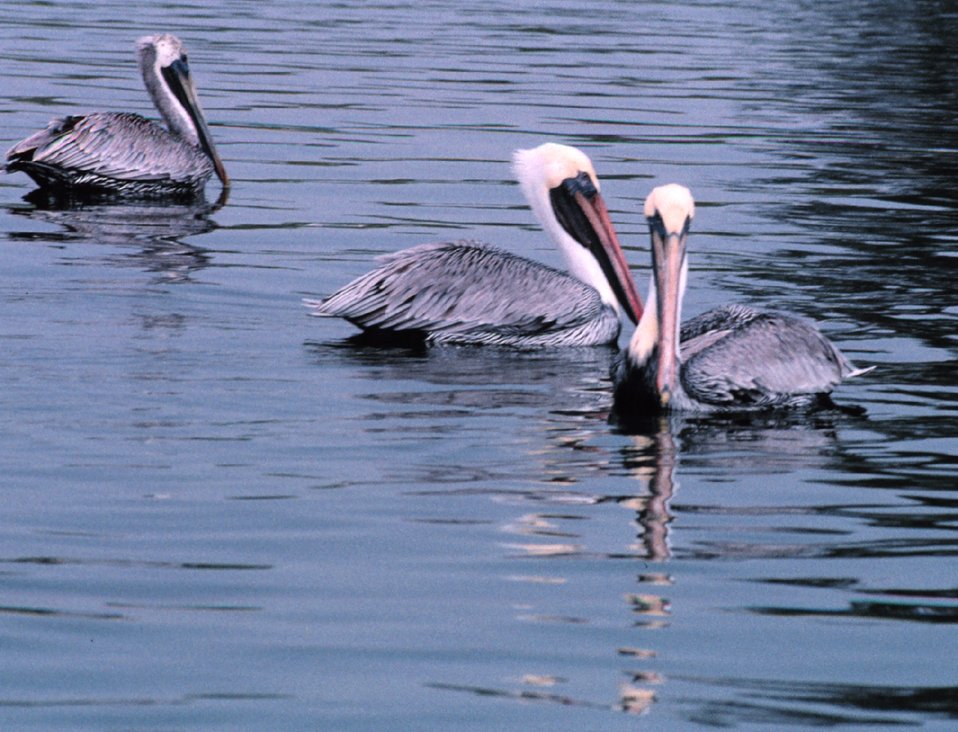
Three Brown Pelicans rest at the entrance to Maximo Park.